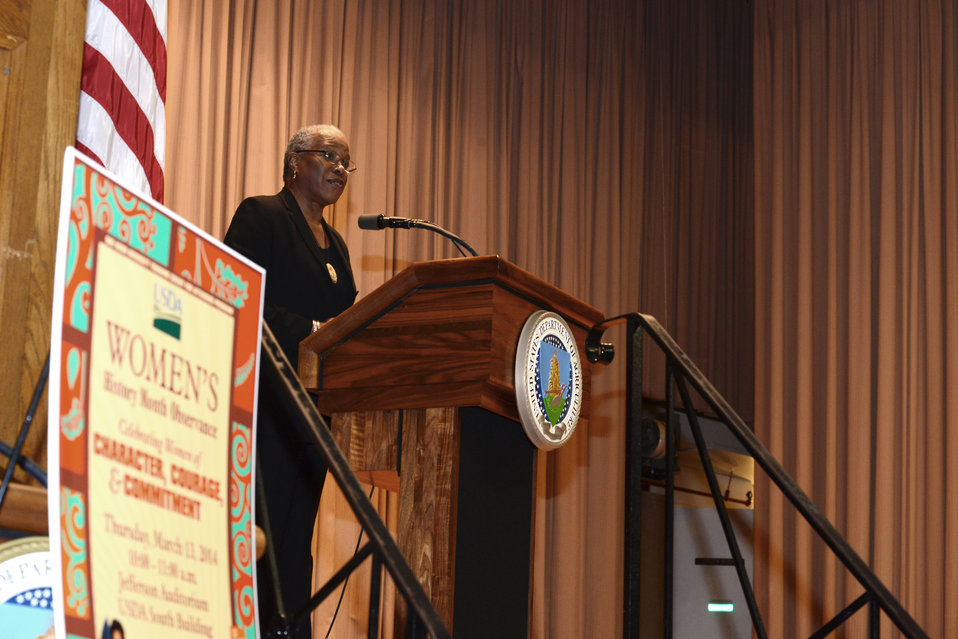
U.S. Department of Agriculture (USDA) Food Nutrition Service (FNS) Administrator Audrey Rowe is the Mistress of Ceremony at USDA’s Women’s History Month Observance in the Jefferson Auditorium at USDA on Thursday, Mar. 13, 2014. The theme for this year’s observance is “Celebrating Women of Character, Courage, and Commitment”.